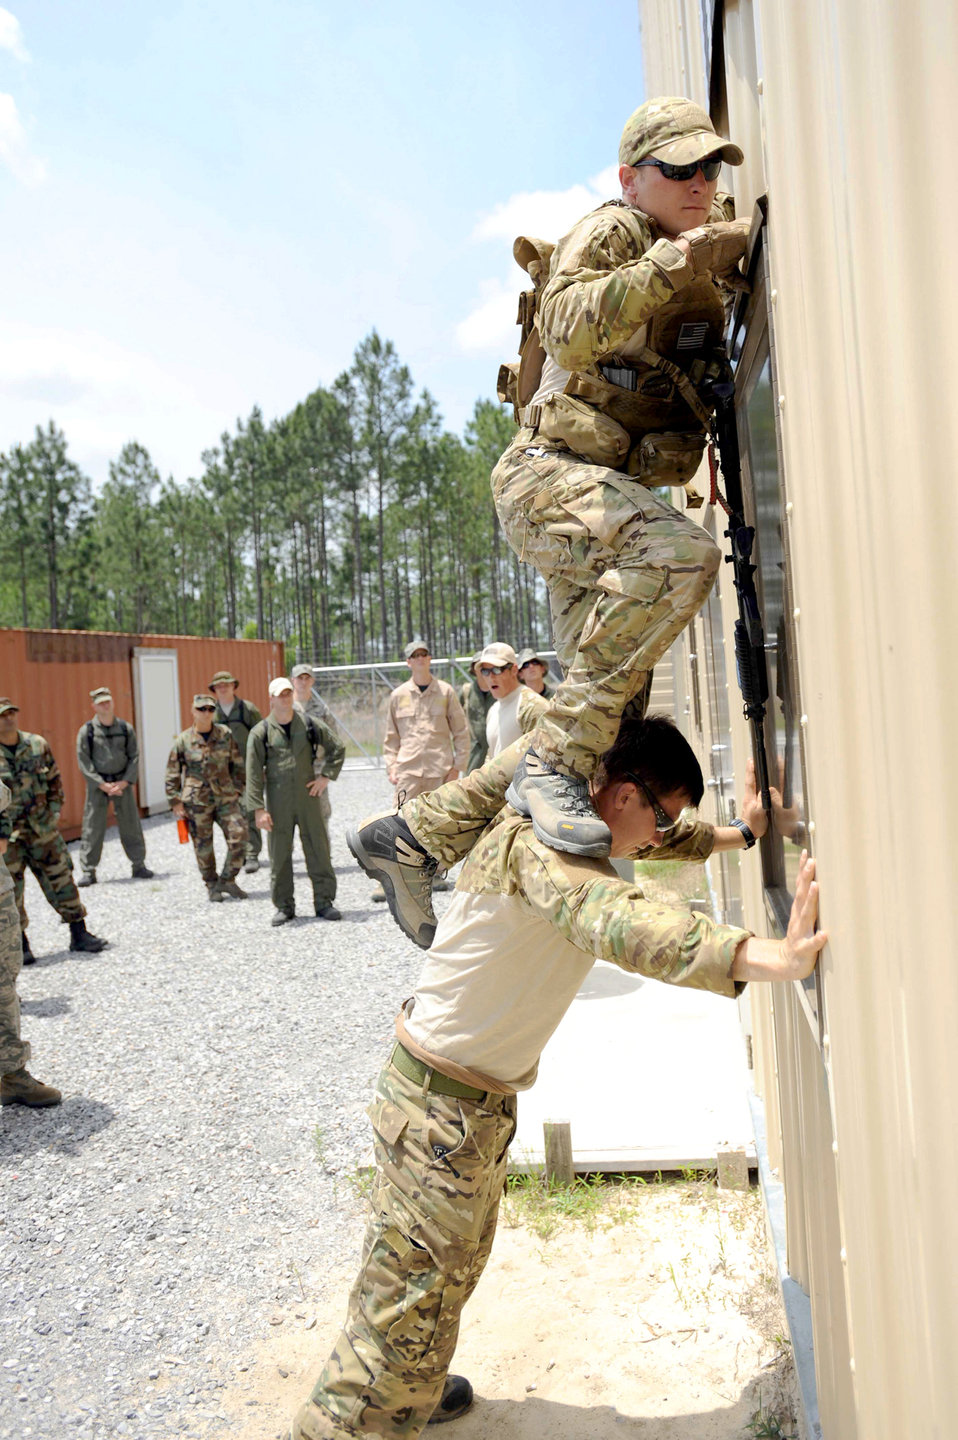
It's called a ladder shirt

Survival, evasion, resistance and escape, or SERE, specialists demonstrate how to enter a second-story window during combat skills training at the Eglin Air Force Base, Fla., range. SERE specialists are able to use resources and experiences from other specialists to prepare Airmen for situations that may happen in combat.